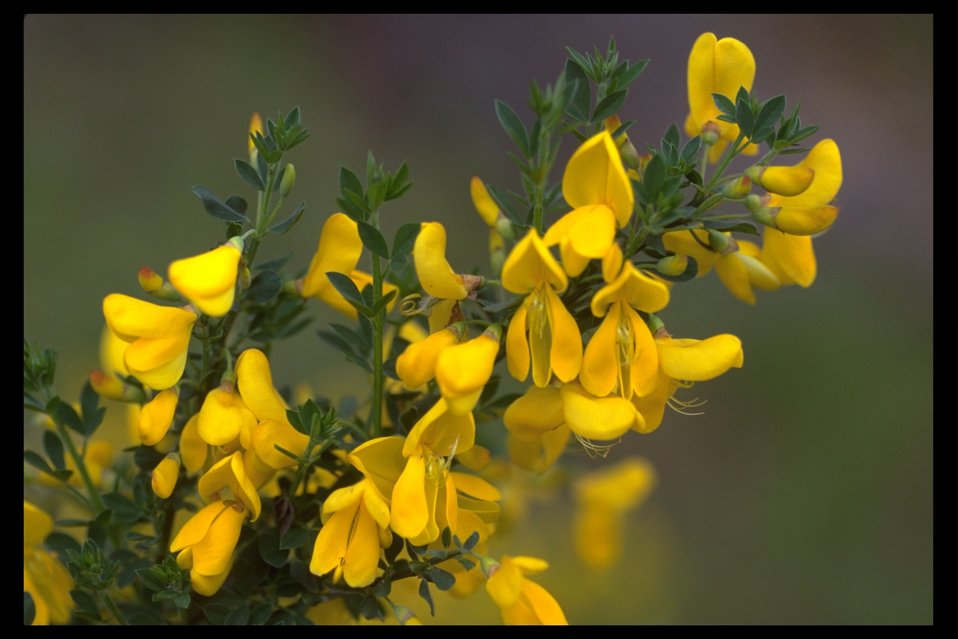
Scotch (Scot's) Broom, a noxious weed, (Cytisus scoparius) along the Rogue River Drive at Shady Cove.